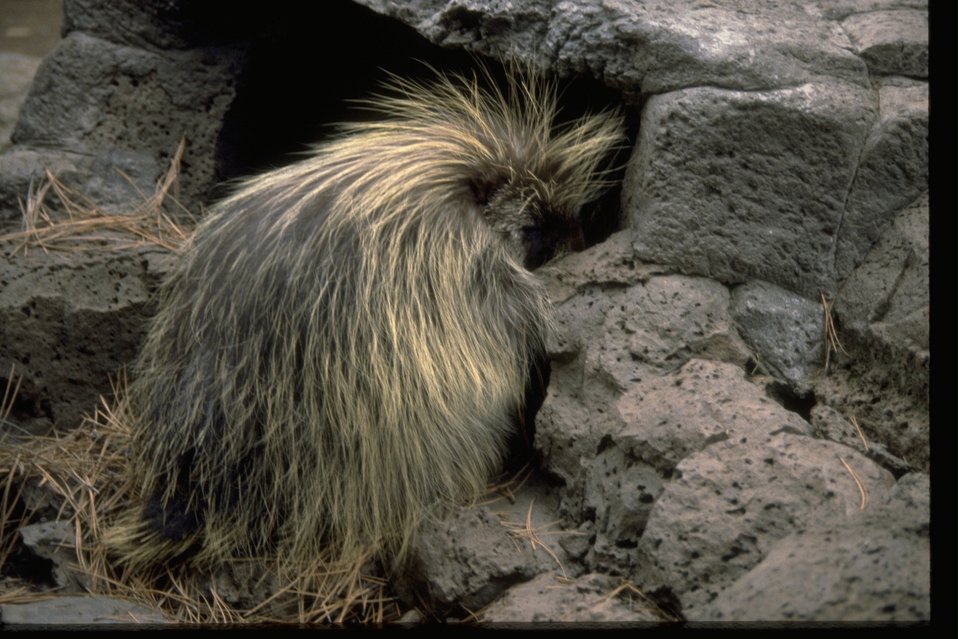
A porcupine trying to get into a rocky hole.